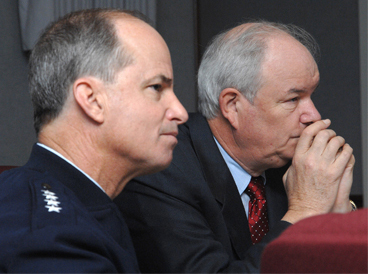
Air Force secretary sets sights on space

Secretary of the Air Force Michael W. Wynne and Gen. Kevin P. Chilton listen to a briefing May 7 at Peterson Air Force Base, Colo., on several focus areas of Air Force Space Command, including space professional development and the National Space Security Institute. General Chilton is the AFSPC commander.